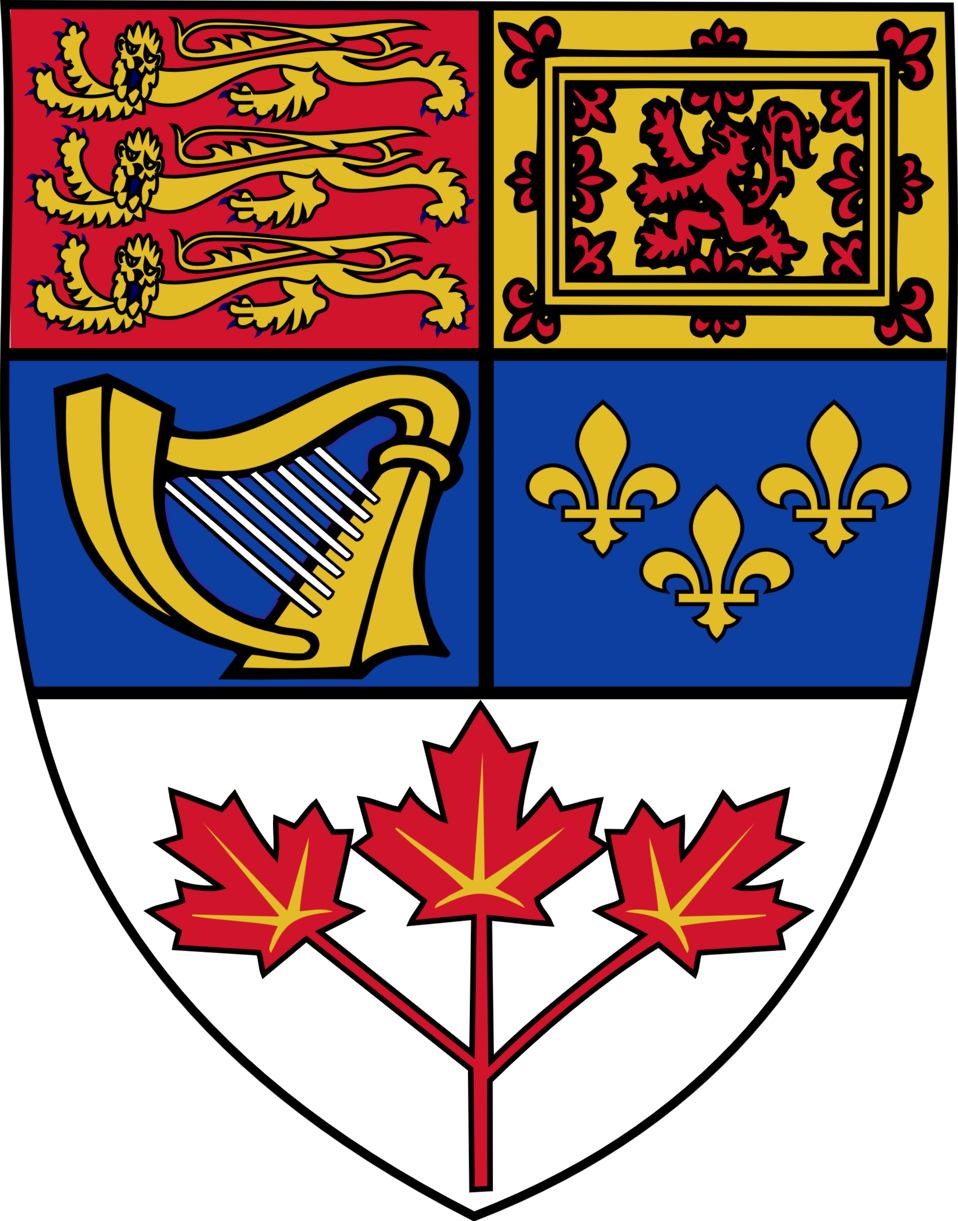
The shield from the en:Coat of arms of Canada. The shield was created by a Royal Warrant in 1921, thus out of Canadian Copyright. [1]